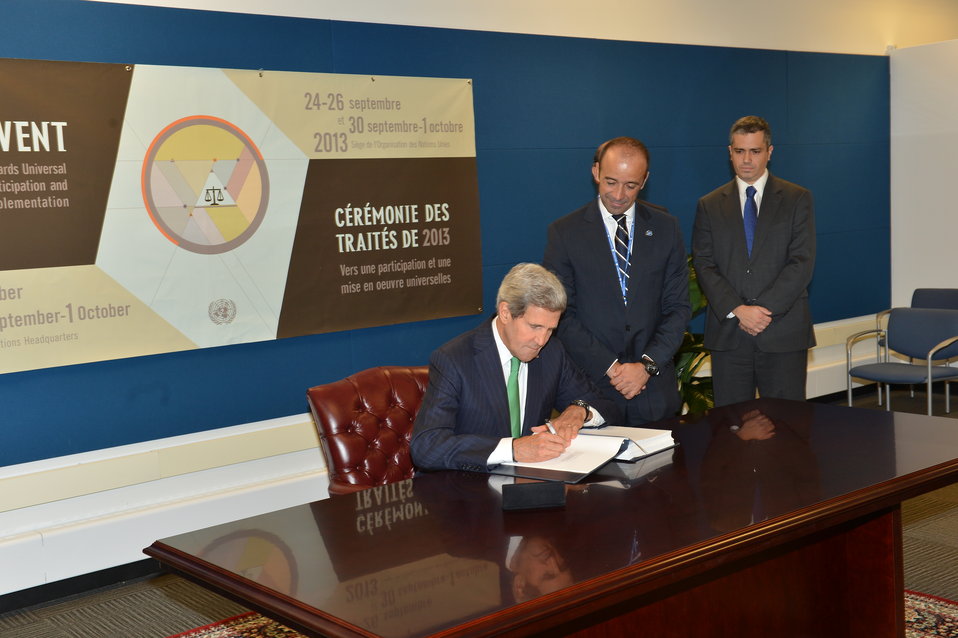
Secretary Kerry Participates in the Arms Trade Treaty Signing Ceremony

U.S. Secretary of State John Kerry participates in the Arms Trade Treaty signing ceremony at the United Nations in New York City on September 25, 2013.